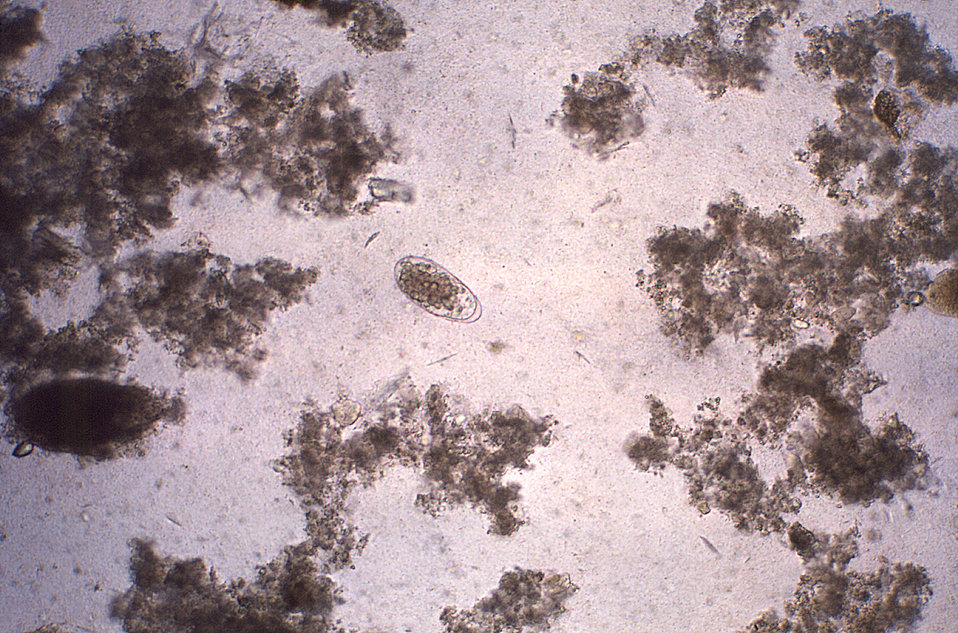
Magnified 128X, this photomicrograph revealed some of the ultrastructural features displayed by an infertile, Ascaris lumbricoides egg.